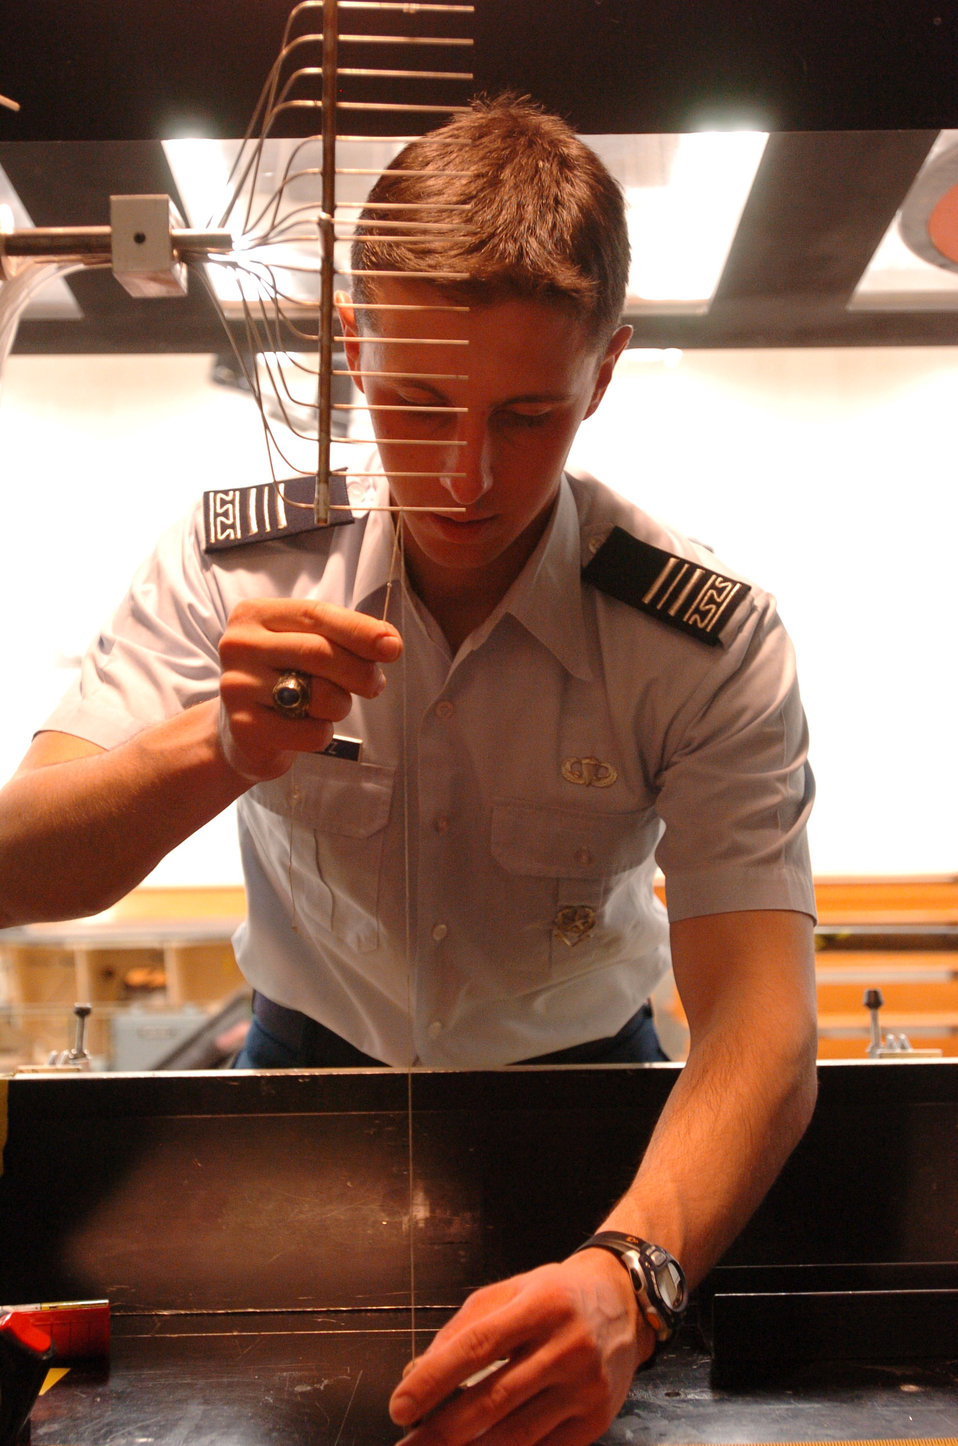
Cadets' research ensures astronauts' safe return from moon

Cadet 1st Class Christopher Oravetz uses a plumb line to center a group of Pitot tubes inside a wind tunnel March 7 at the U.S. Air Force Academy, in Colorado Springs, Colo. His experiment tests the wake coming off different designs, speeds and angles of attack for the new crew exploration vehicle to be used by NASA to return man to the moon. By determining the wake caused by different experiments, his results will help NASA decide how large to make parachutes to install on the finished vehicle.